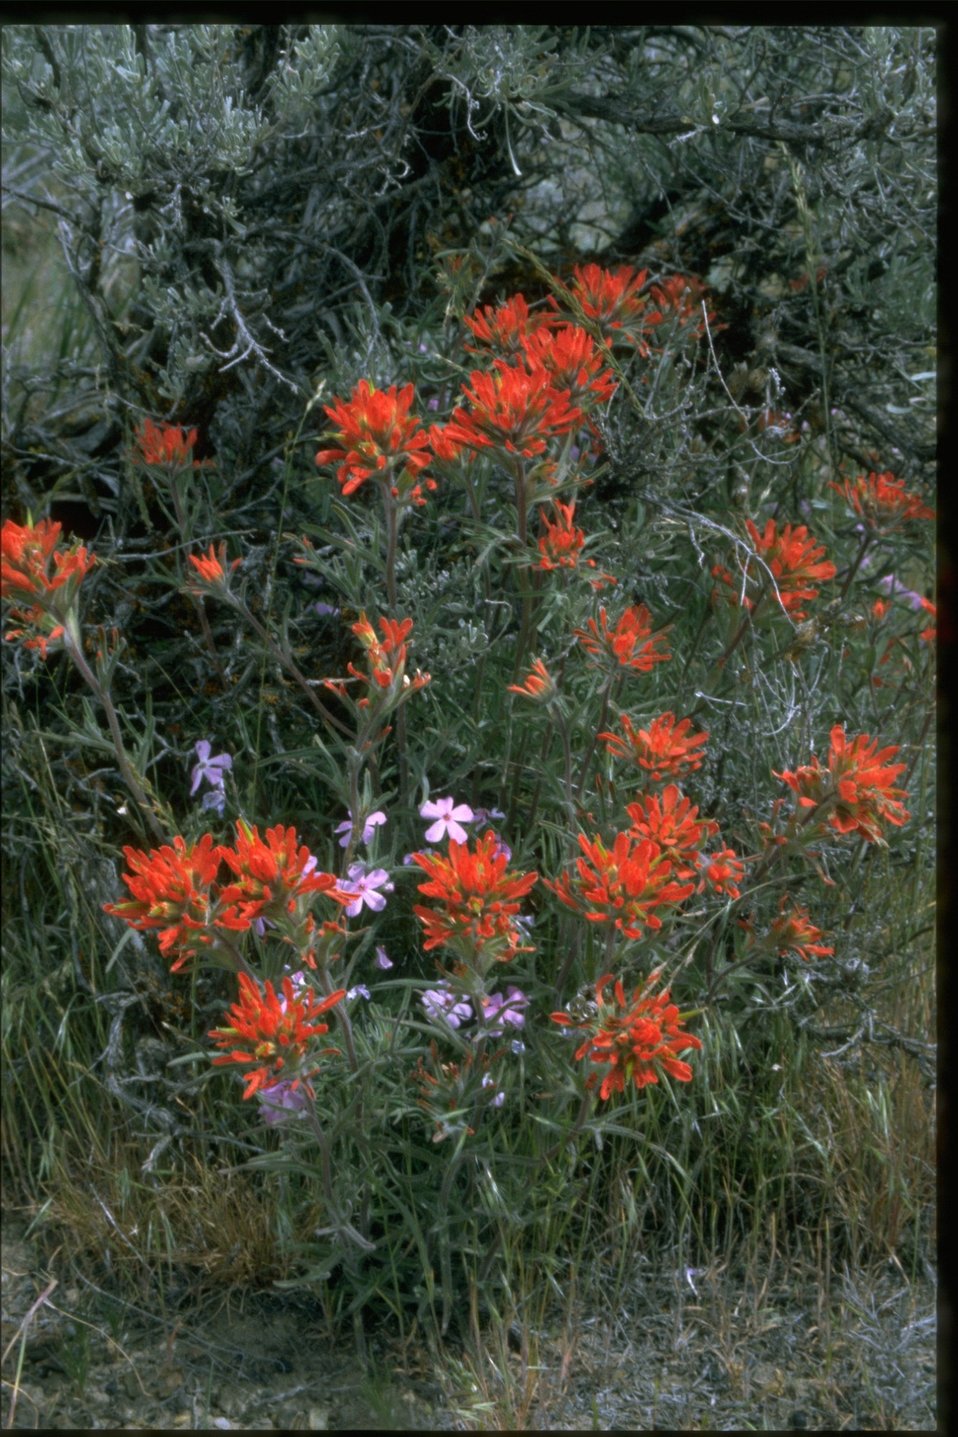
Medium shot of Indian Paintbrush (Castilleja linariaefolia) and Phlox.